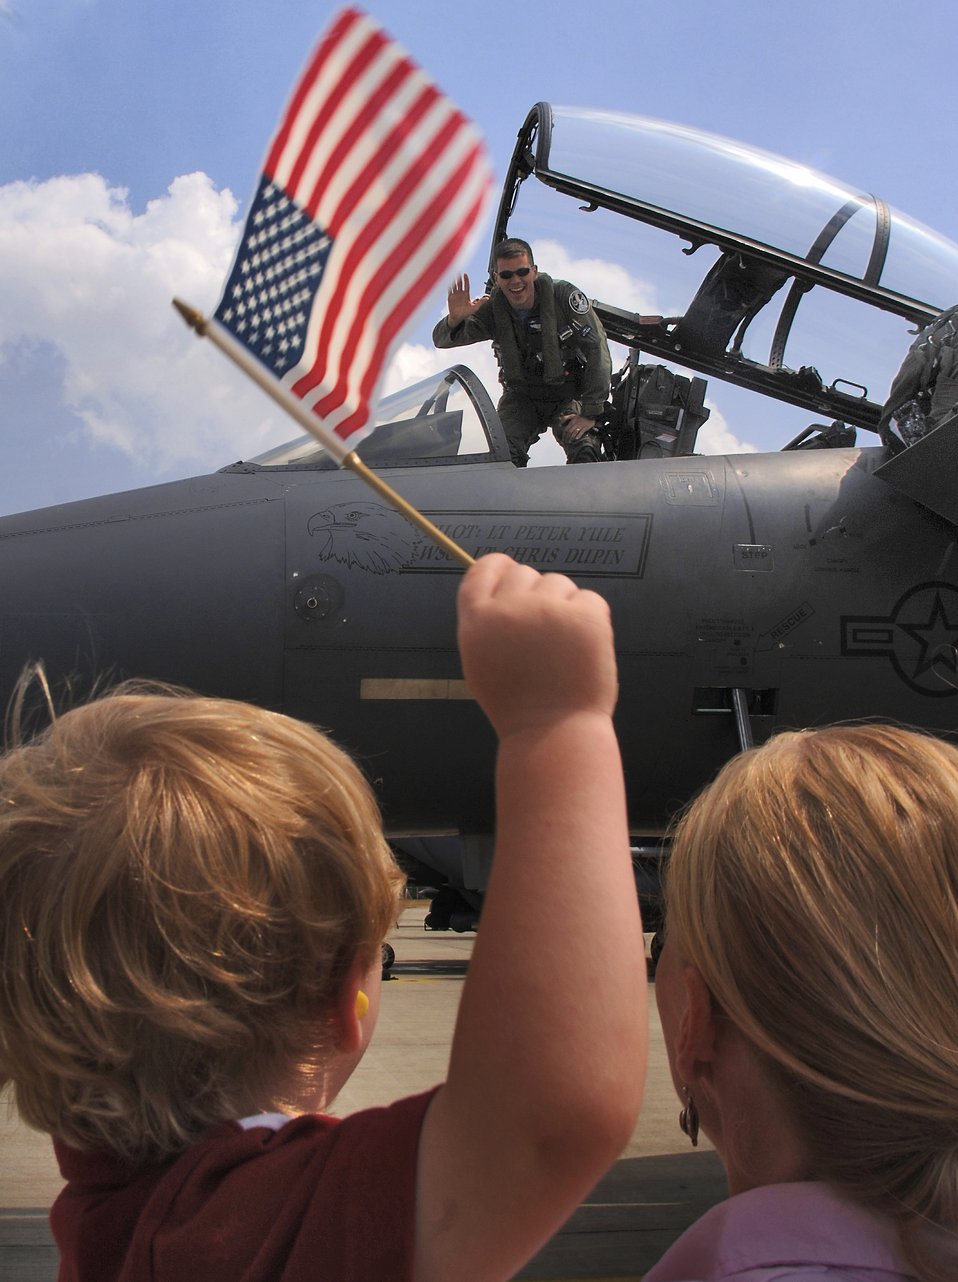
Lakenheath Strike Eagles return from Bulgaria

Aimee Hemmingsen, right, holds her 3-year-old son Mitchell as he waves an American flag while waiting for his father, Capt. Martin Hemmingsen, to climb down from his F-15E Strike Eagle on his return to Royal Air Force Lakenheath, England, on Friday, July 28. The captain, of the 492nd Fighter Squadron, and other members of the 48th Fighter Wing deployed to Graf-Isnatievo Air Base, Bulgaria, where they took part in exercise Immediate Response, which began July 17. The joint, trilateral exercise also included the Bulgarian and Romanian militaries and U.S. Soldiers. The Airmen practiced ground attack and air-to-air tactics.